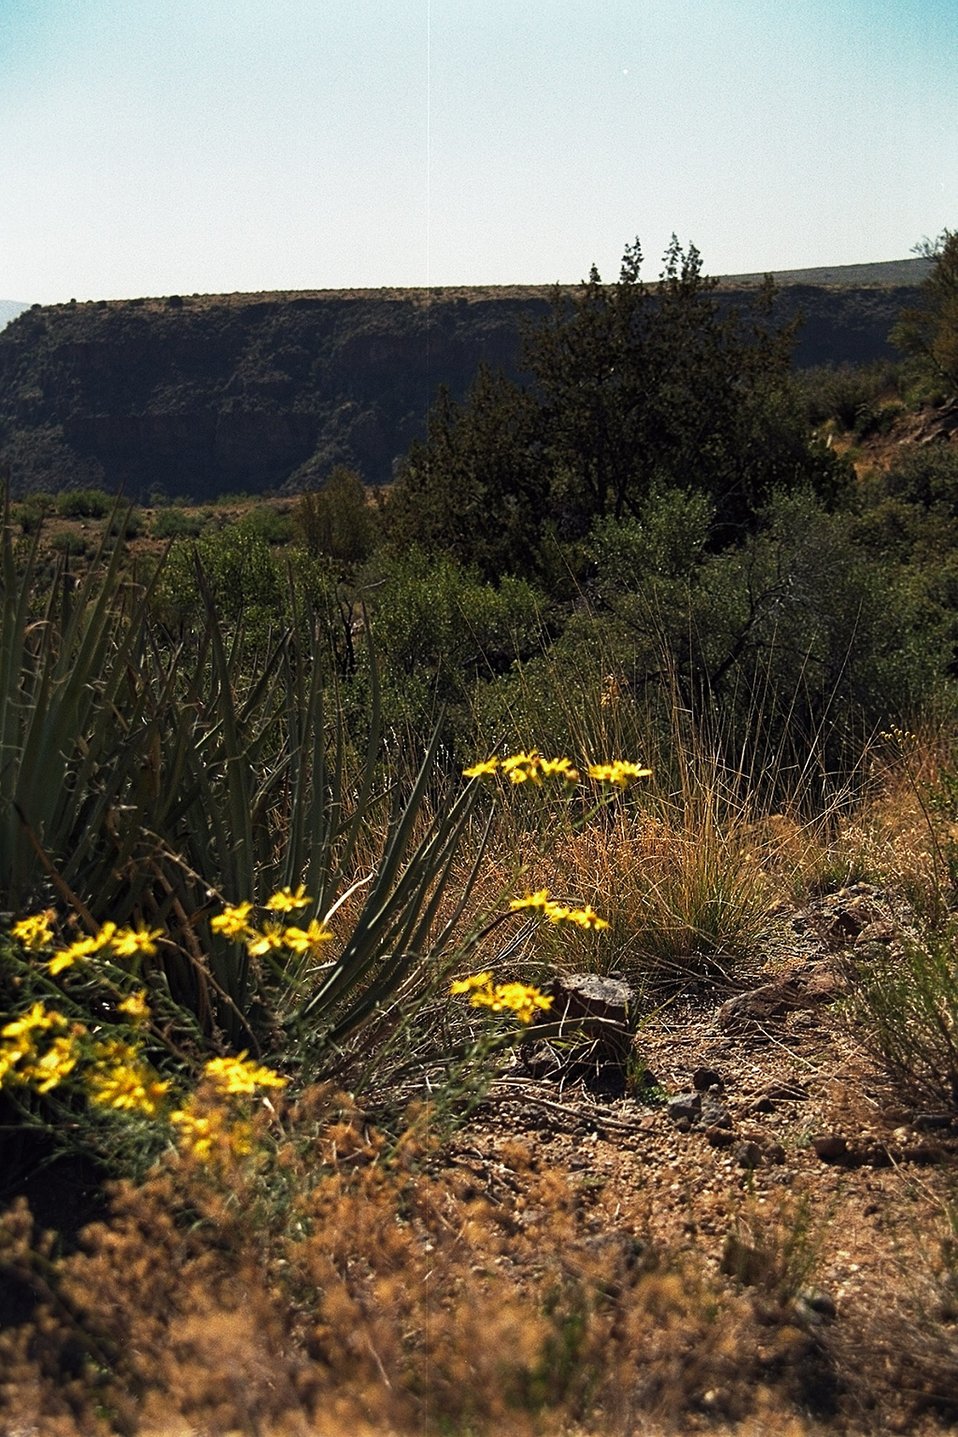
A pretty landscape shot in the Agua Fria National Monument with some yellow wildflowers in the foreground.